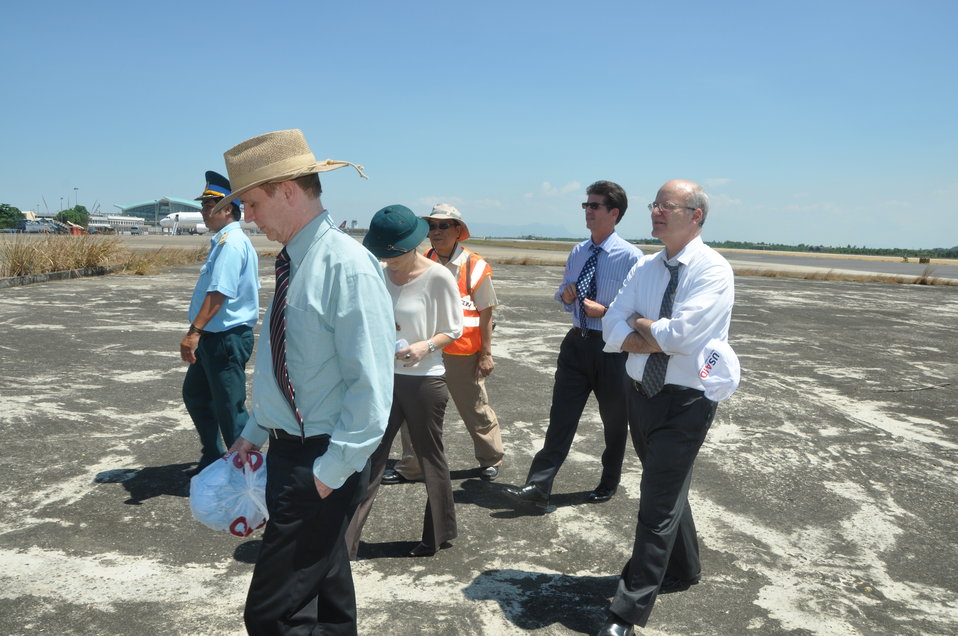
USAID Deputy Administrator Donald Steinberg and delegation visit Danang Airport

USAID Deputy Administrator Donald Steinberg Visits Vietnam